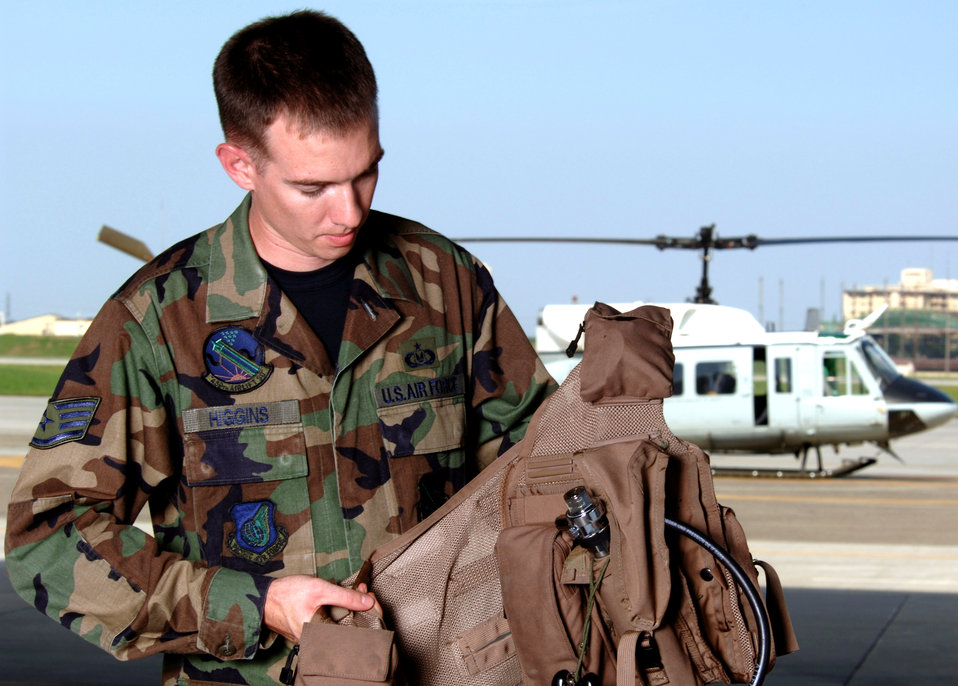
Pacific life support

YOKOTA AIR BASE, Japan -- Staff Sgt. Brian Higgins prepares life-support equipment before a UH-1N Huey helicopter mission. He is a life-support technician with the 459th Airlift Squadron here.